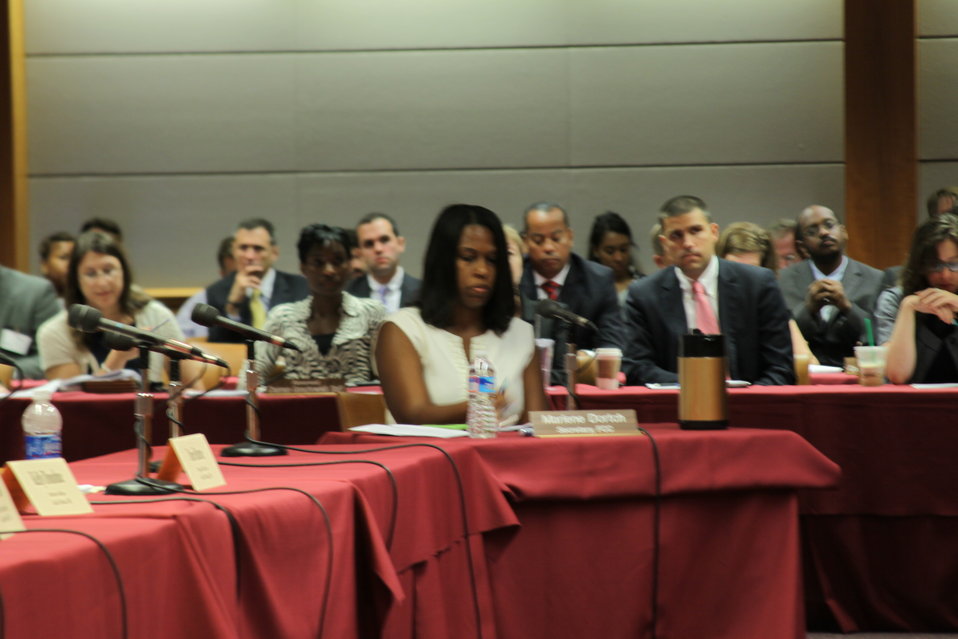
7/12/2011 Open Commission Meeting

FCC Secretary Marlene H. Dortch at the July 2011 Open Commission Meeting